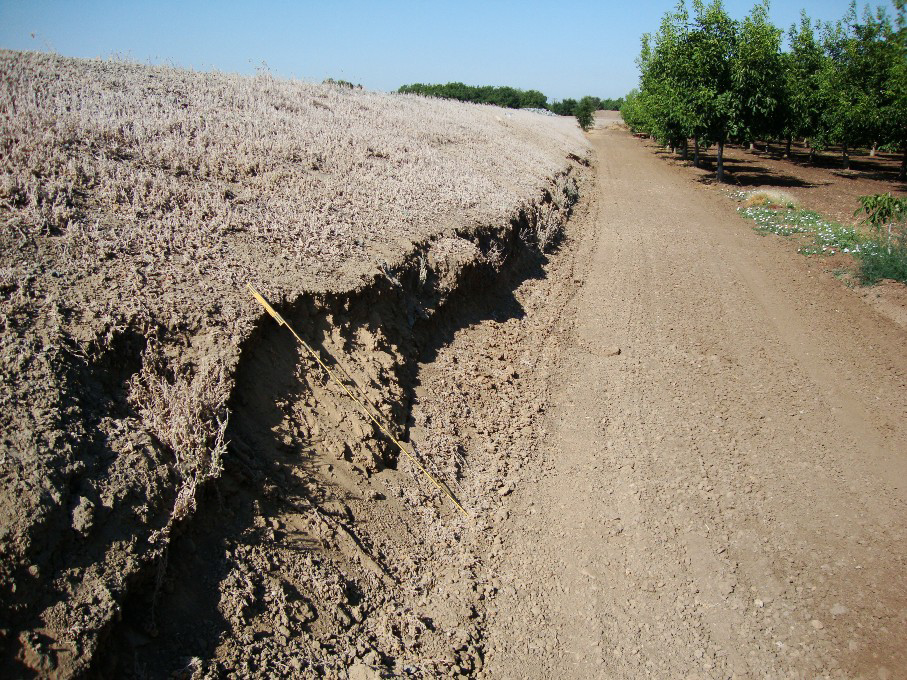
Levee encroachment in the Stockton area

A road encroaches on the toe of a levee in the Stockton, Calif., area, shown during a levee inspection in 2010. The U.S. Army Corps of Engineers inspects levees in its Rehabilitation and Inspection Program to ensure levees don’t pose an unacceptable risk to lives and to provide levee managers and residents with detailed information on the condition of levees to help them make informed decisions about safety.